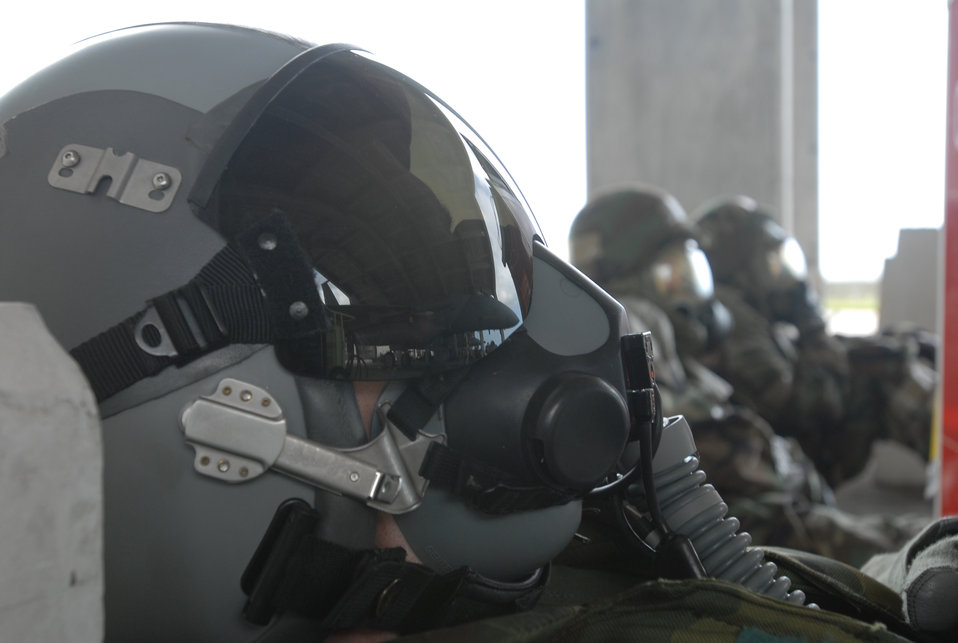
Simulated chemical attack

Airmen from the 67th Fighter Squadron don MOPP 4 gas masks and suits and take cover during a base chemical attack exercise at Kadena Air Base, Japan.